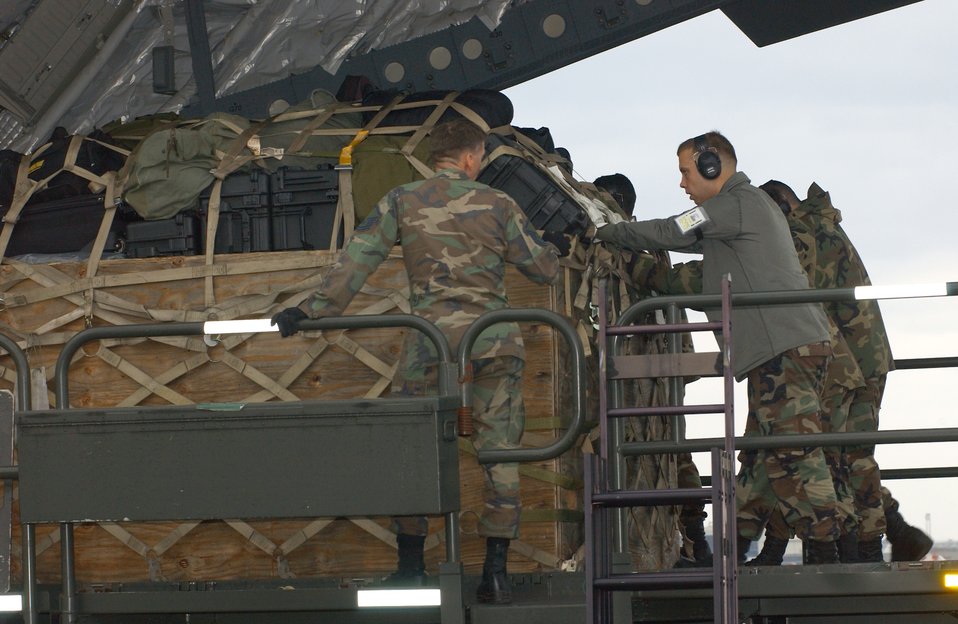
Equipment for Banda Ache

KADENA AIR BASE, Japan -- Airmen load a C-17 Globemaster III with pallets of equipment here bound for Banda Ache, Indonesia, Jan. 9. The 615th Air Mobility Operations Group, from Travis Air Force Base, Calif., will provide aircraft support for the ongoing humanitarian relief in wake of the tsunami disaster. The Airmen are assigned to the 733rd Air Mobility Squadron here.